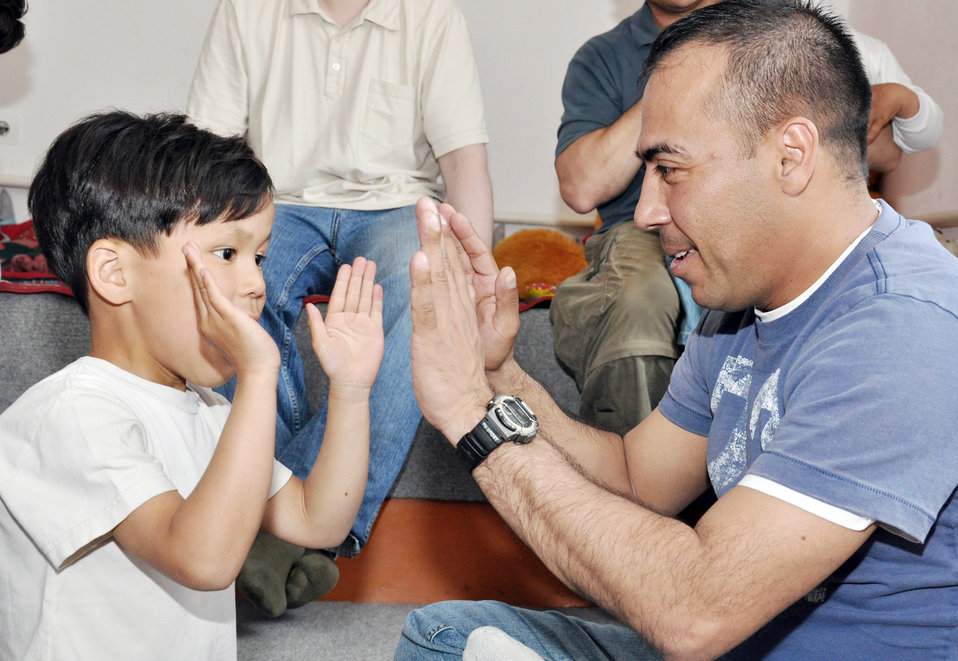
Manas Airmen help support Kyrgyzstan disabled children

Master Sgt. Jerry Molina plays with a young boy April 27, 2010, at the Nadjeshda Children's Center in Kyrgyzstan. Sergeant Molina is assigned to the Transit Center at Manas.